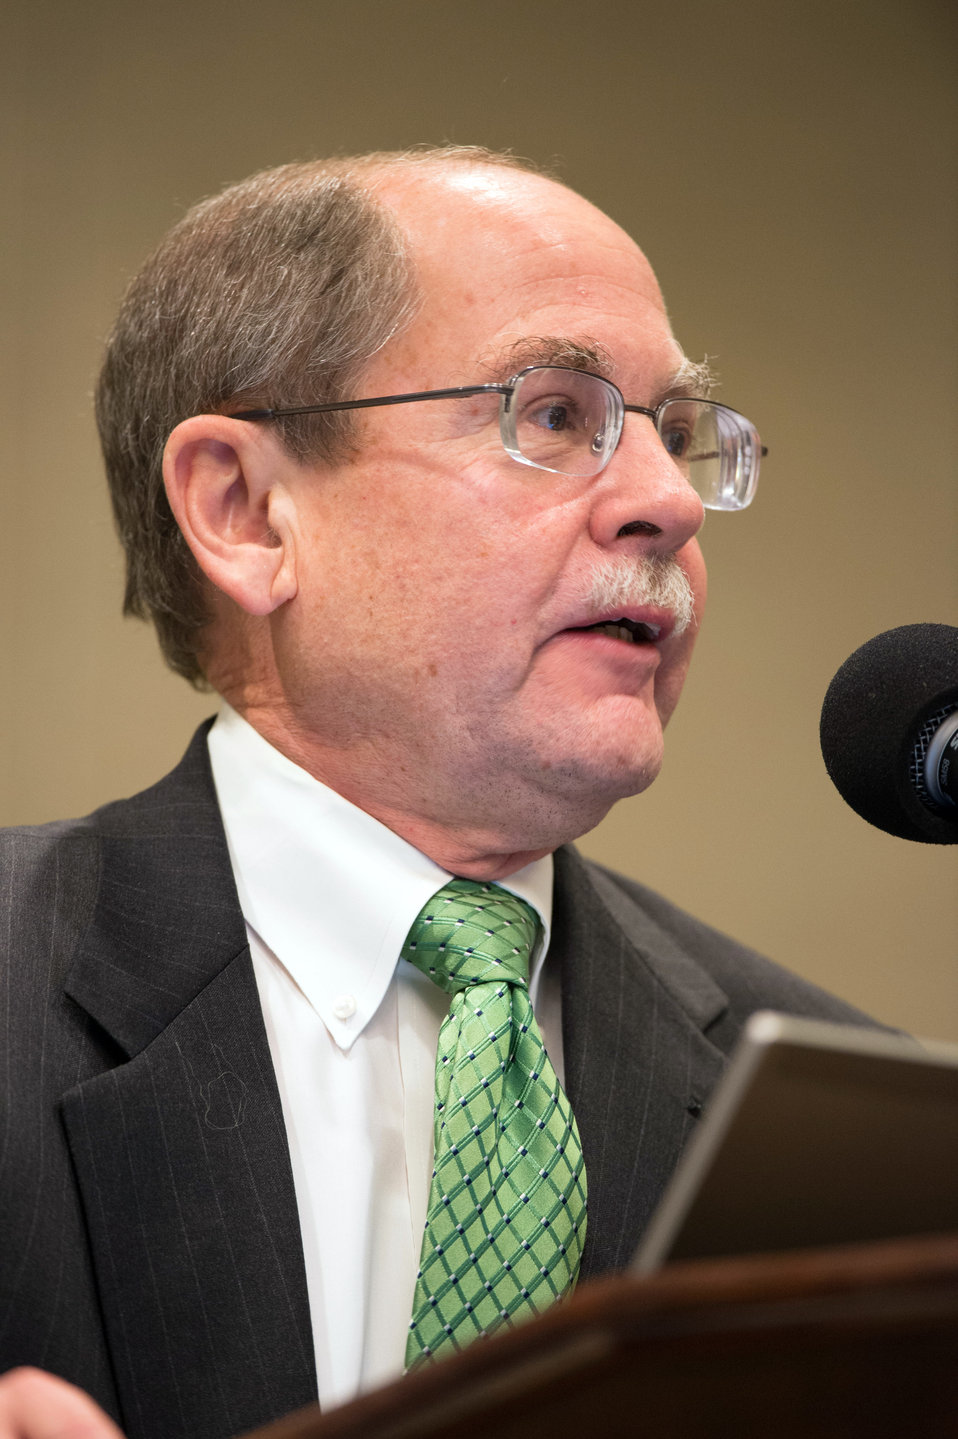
Appalachian Regional Commission Chief of Staff Guy Land speaks at the plenary panel on Know Your Farmer, Know Your Food: The Past, Present and Future at the Agricultural Outlook Forum on Friday, Feb. 21, 2014 in Arlington, VA. The panel reviewed the goals and objectives of Know Your Farmer, Know Your Food (KYF2) initiative. The panel spoke about how the initiative works; what has been accomplished to date; how local food systems can use KYF2 and other U.S. Department of Agriculture (USDA) programs to improve the supply, distribution, and demand for local foods; how KYF2 and Federal –State-local partnerships work together to promote local food production and distribution; and highlighted the initiative’s work to grow the local food economy in Appalachia. The U.S. Department of Agriculture’s (USDA) annual Agricultural Outlook Forum brings together the agricultural community to discuss policy, trade, science, rural development, and the economic outlook for the coming year. The Forum also focuses on forestry, health and nutrition issues, and the changing dynamics and face of rural America.